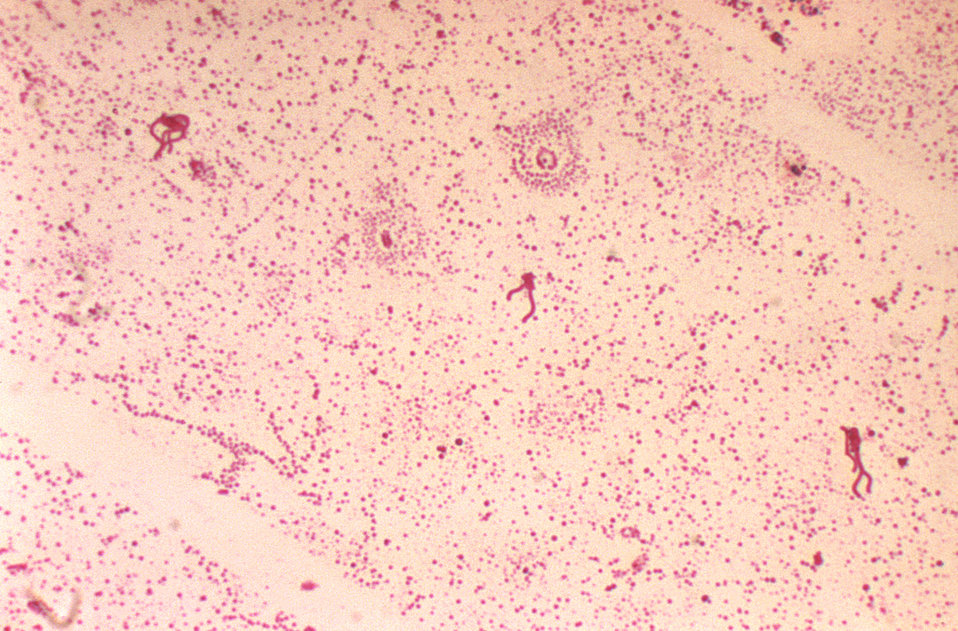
Alcaligenes denitrificans. Flagella stain.